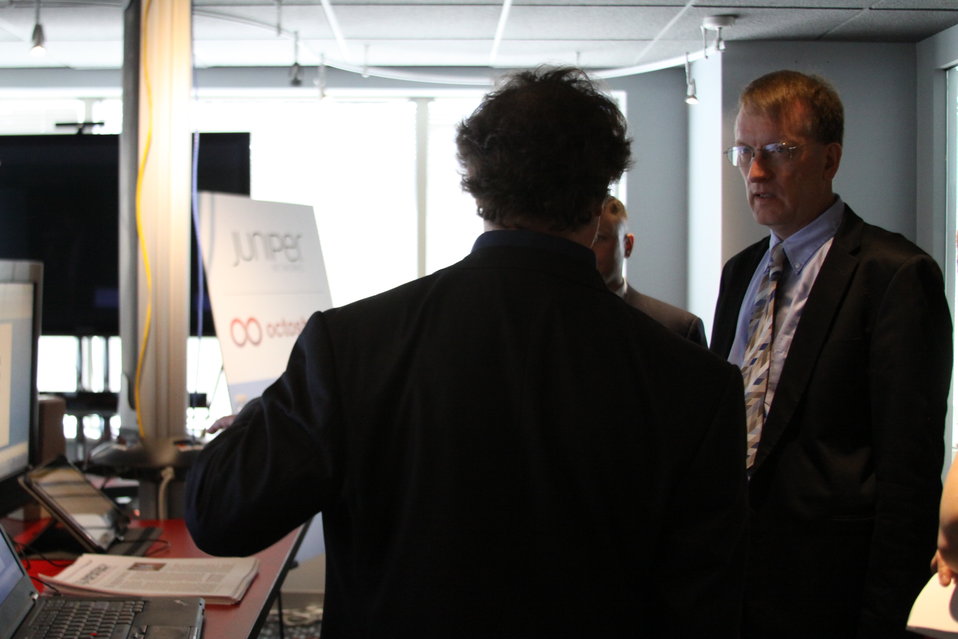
Technology Experience Center Demonstration